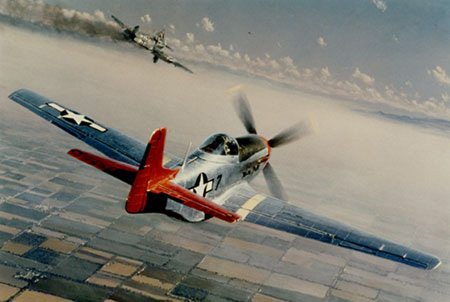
Clarence D.

Tuskegee Airmen distinctive